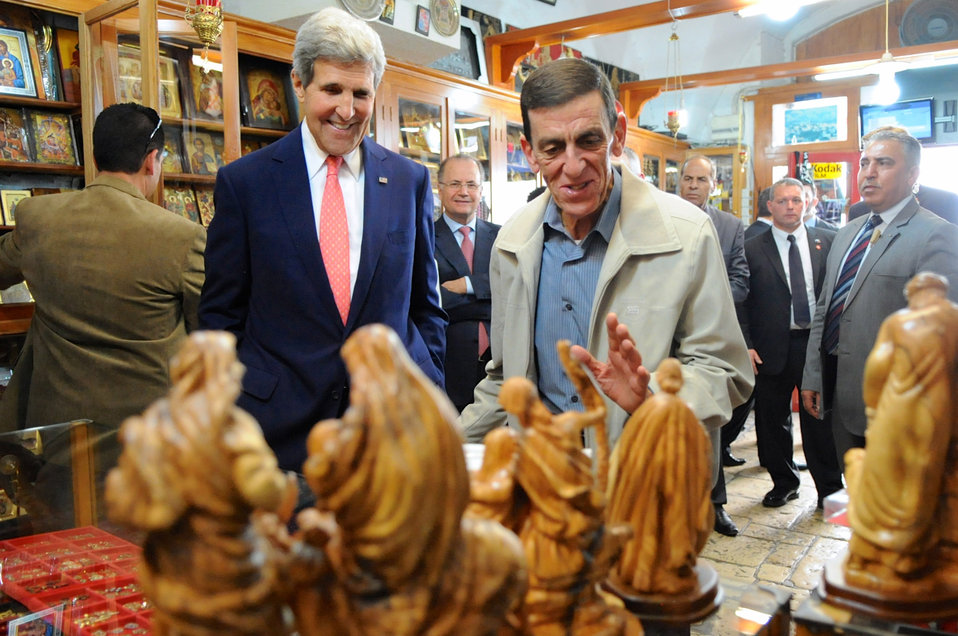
Secretary Kerry Visits a Nativity Store in Bethlehem

U.S. Secretary of State John Kerry and Epiphany Tabash, the second-generation owner of the Tabash Nativity Store on Manger Square in Bethlehem, look over olive wood carvings during the Secretary's visit to the West Bank on November 6, 2013.